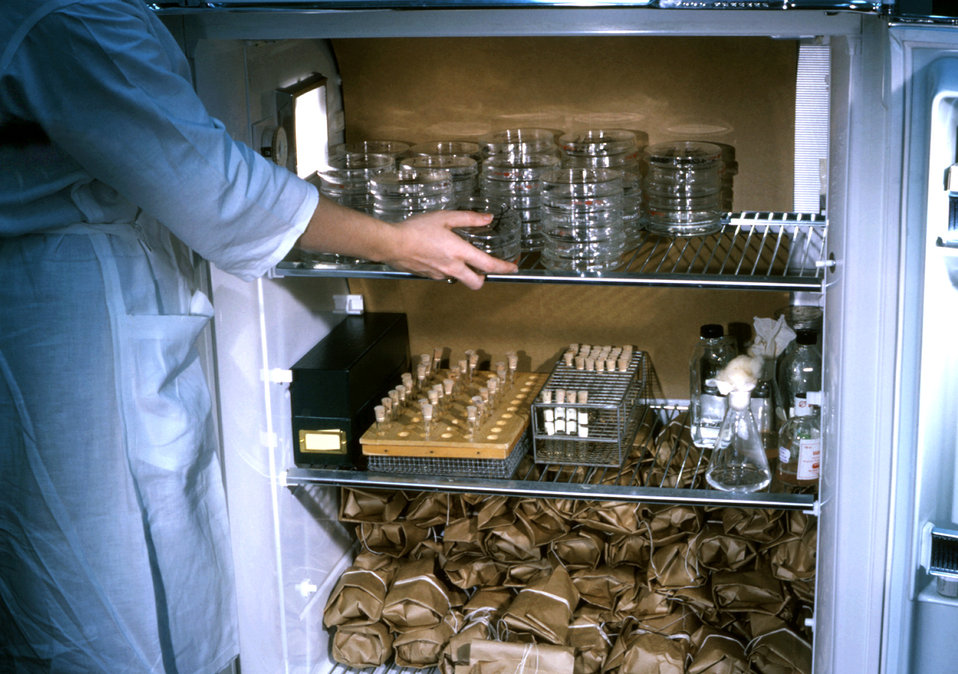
This CDC lab technician is shown here placing Petri dishes containing sorted mosquitoes into refrigerated environment.